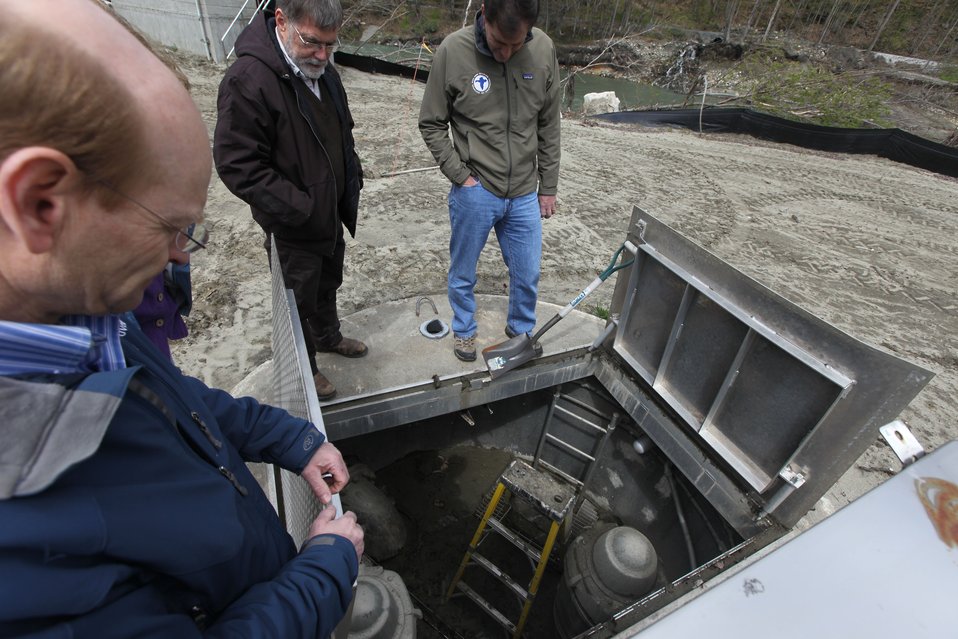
Ken Brownell, Service Engineer explains the repairs to Service Director Dan Ashe

U.S. Fish & Wildlife Service Director Dan Ashe visits the Northeast Region
for a tour of the White River National Fish Hatchery in Bethel, Vermont on
April 27, 2012. The hatchery was devastated by Tropical Storm Irene and
Dan Ashe had the chance to meet and thank the staff for their heroic work.
Director Ashe also visited restoration/flood response/fish passage project
sites in Rochester, Vermont and met with local officials and staff from the
White River Partnership.